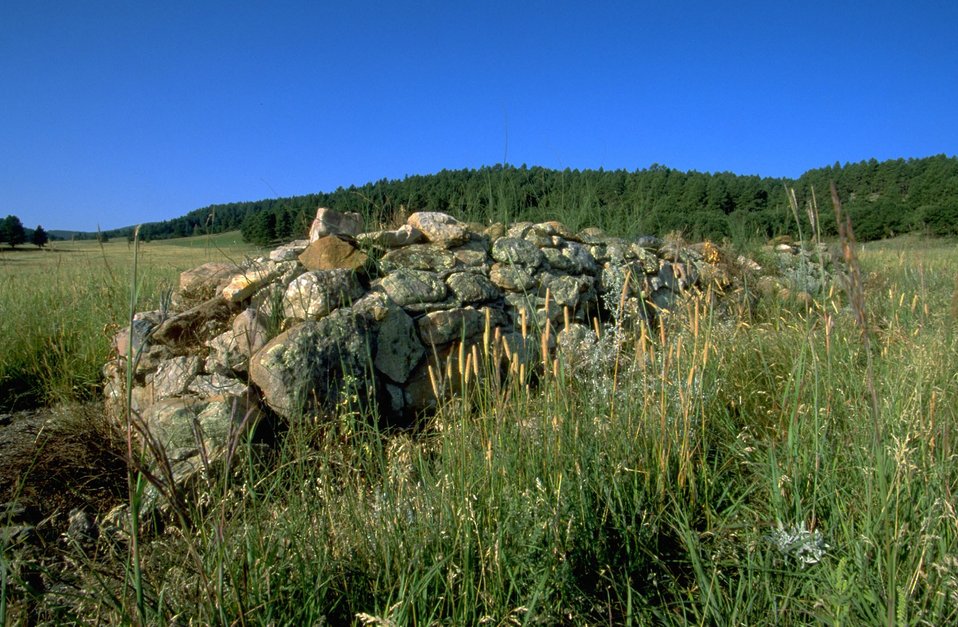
Cavalry Jumps at the south end of Fort Meade